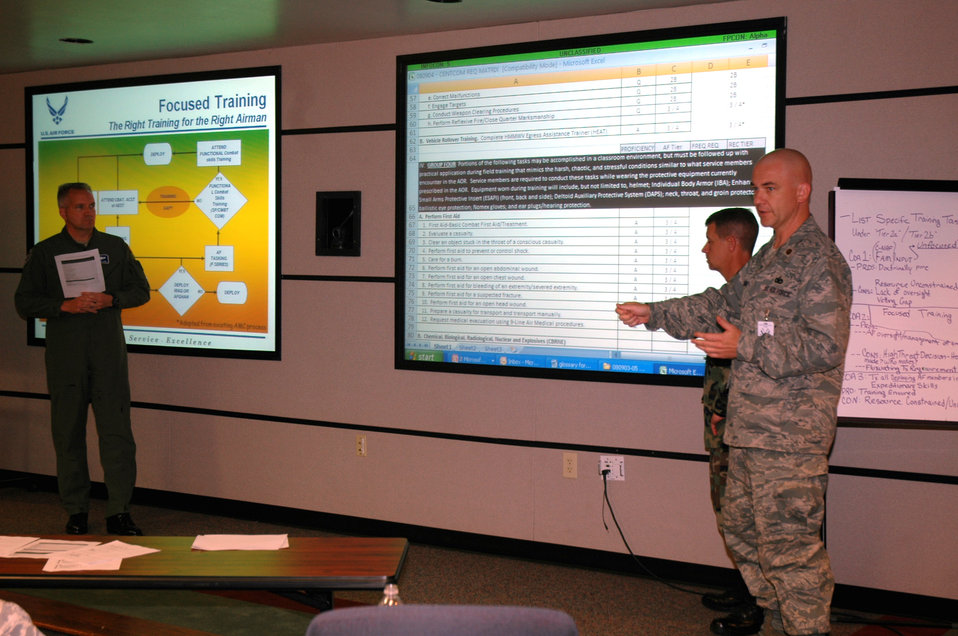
Expeditionary Skills Summit held at Fort Dix

Attendees at the Expeditionary Skills Summit at the U.S. Air Force Expeditionary Center on Fort Dix, N.J., discuss training initiatives Sept. 4, 2008. The summit brought together leaders from around the Air Force to discuss expeditionary training for Airmen.